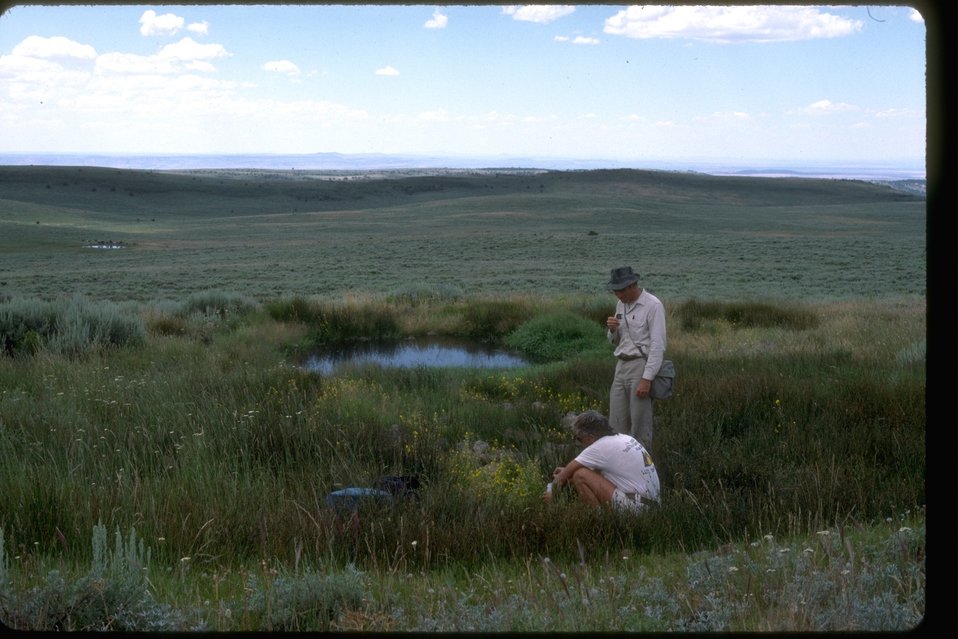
Taking water samples. OR 2-23L